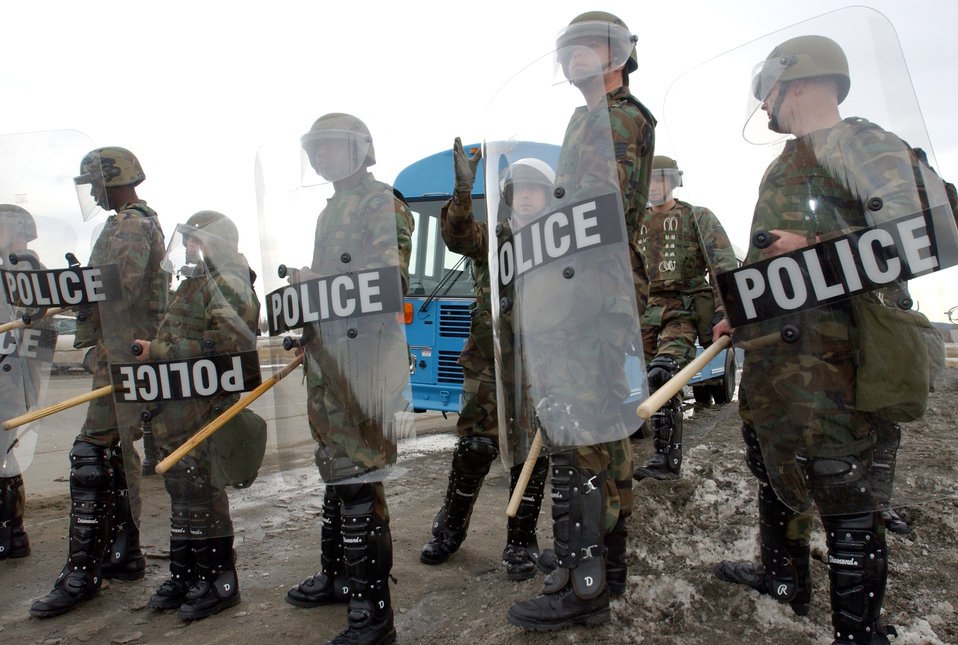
Controlling protesters

EIELSON AIR FORCE BASE, Alaska -- Riot-control police prepare to confront people acting as protestors at the front gate here April 9 during the wing's operational readiness exercise. The riot-control police are members of the 354th Security Forces Squadron.